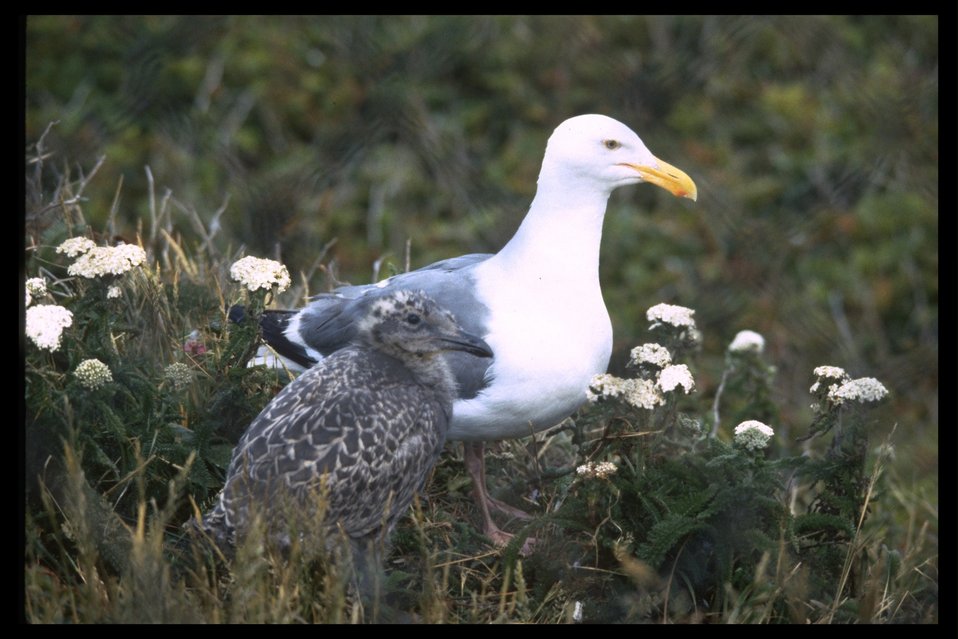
Western Gull with chick.